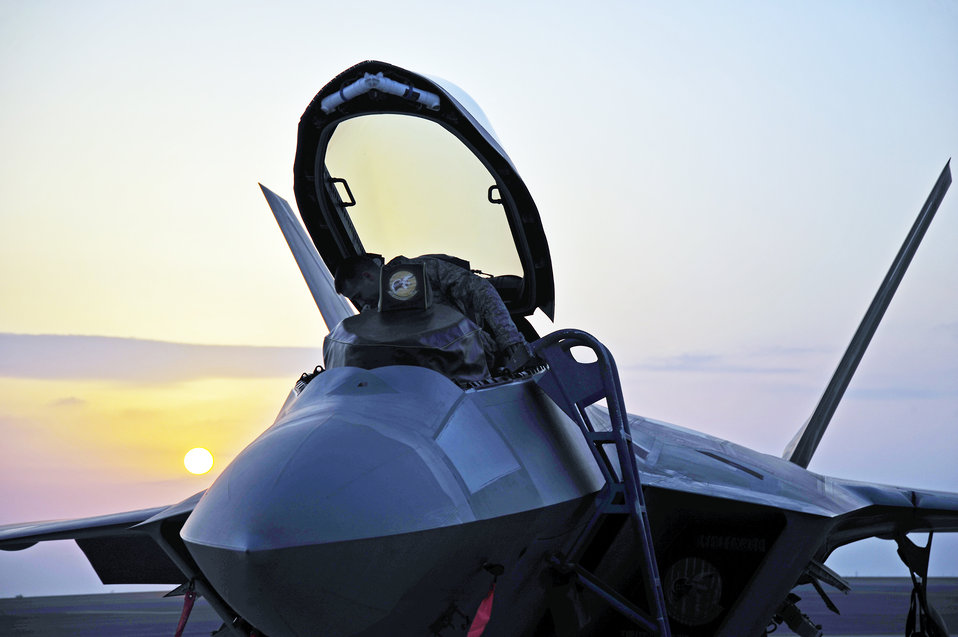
Raptor rests

The sun sets behind an F-22 Raptor recently at an airfield in Southwest Asia. The F-22 and crew deployed from Langley Air Force Base, Va., for the Iron Falcon exercise.